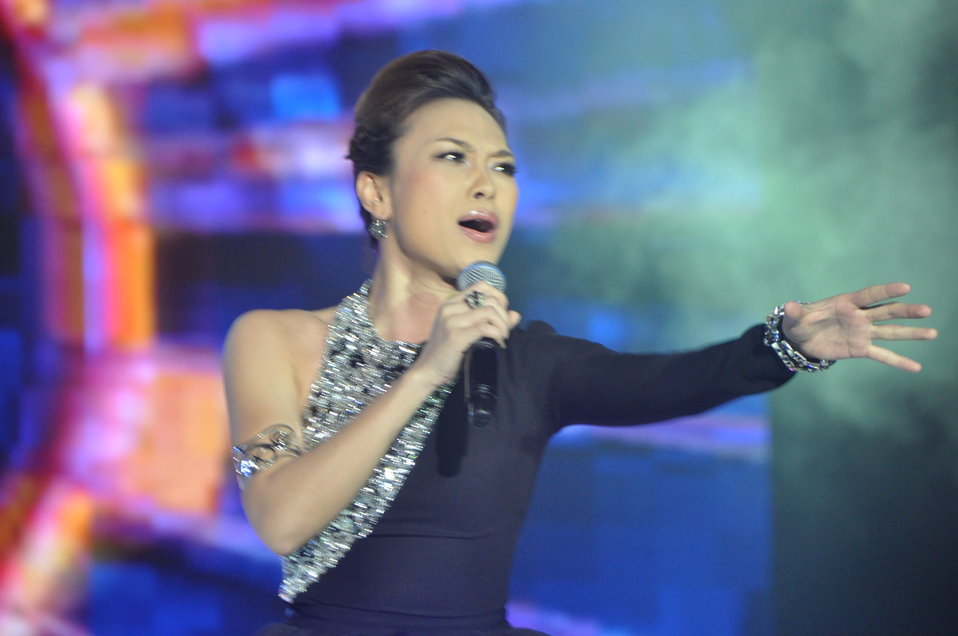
My Tam performs at MTV EXIT concert in Hanoi against human trafficking

USAID co-sponsors MTV EXIT concert, campaign against human trafficking